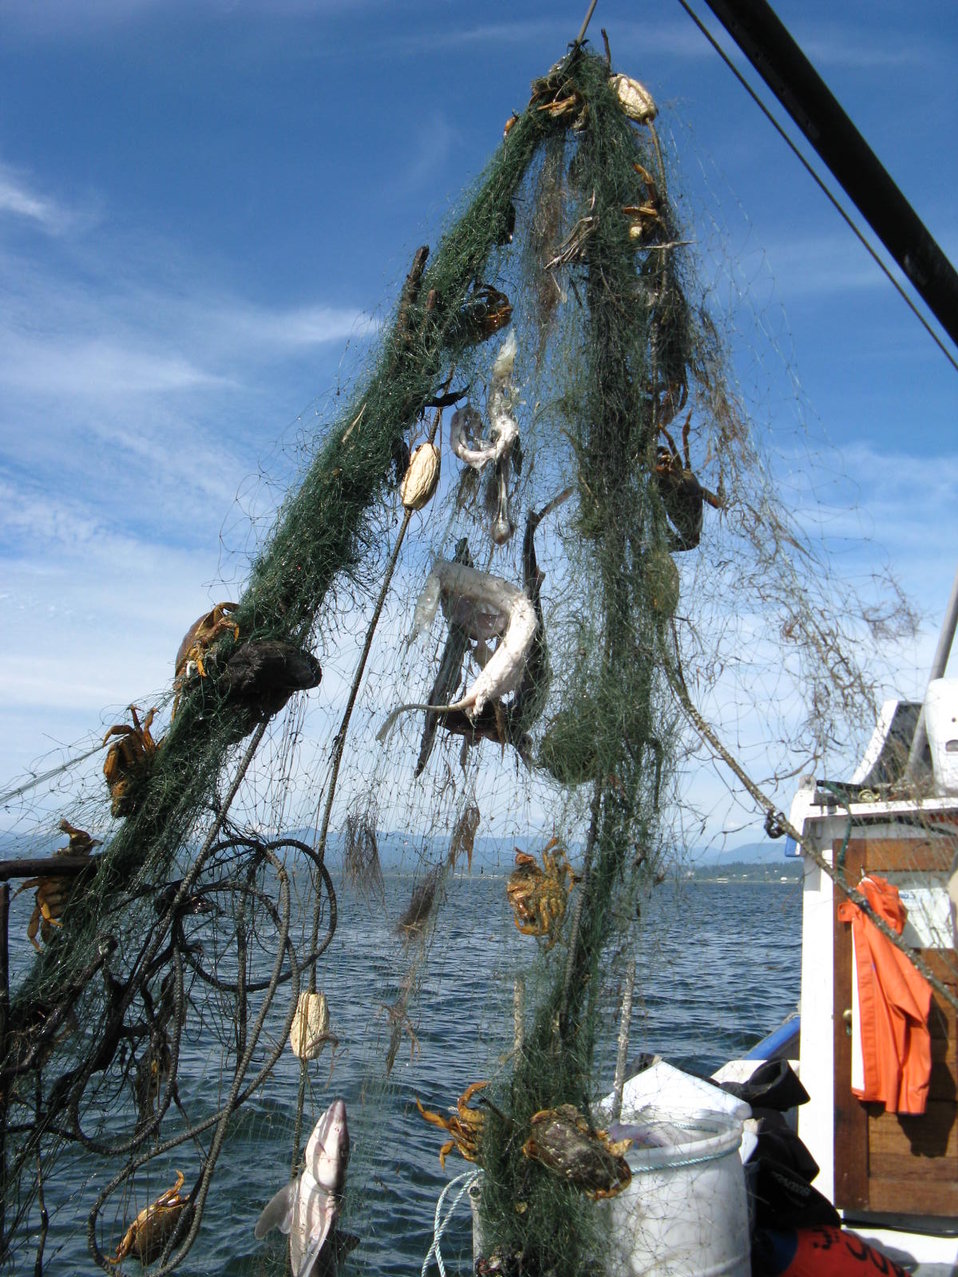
Derelict fishing gear with animal carasses found by the USFWS Puget Sound Coastal Program.

The USFWS Coastal Program in Puget Sound, Washington has worked over the last six years to collect derelict fishing gear. They have recovered 3,600 partial gillnets, averaging 7,000 square feet each, which has eliminated the needless deaths of more than 1.1 million marine mammals, fish, birds and invertebrates each year.